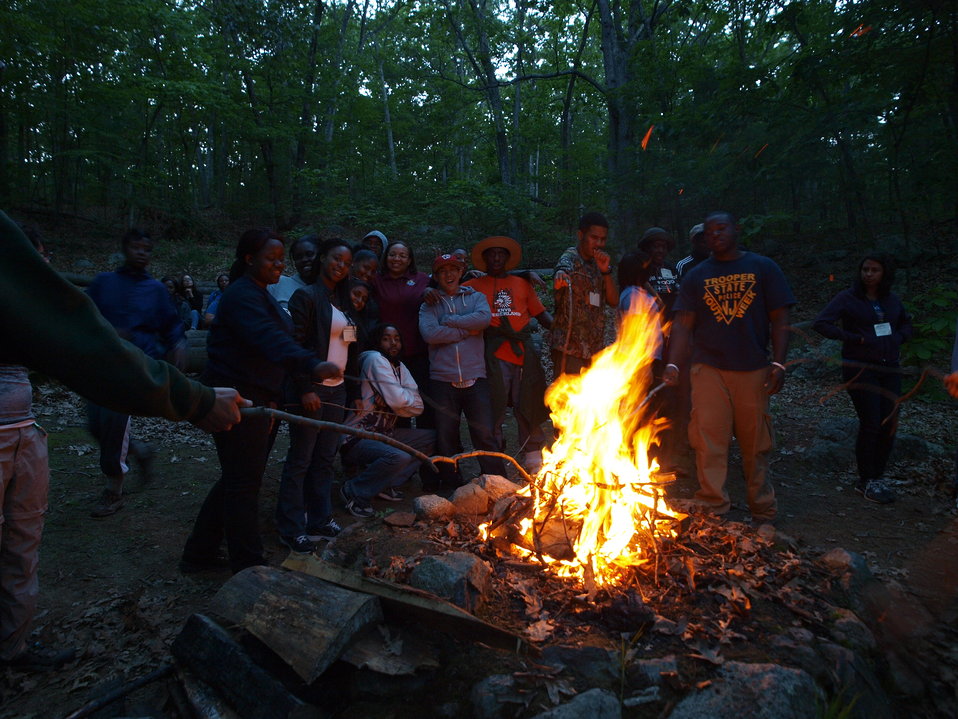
Campfire

Making s'mores and dancing by the fire.